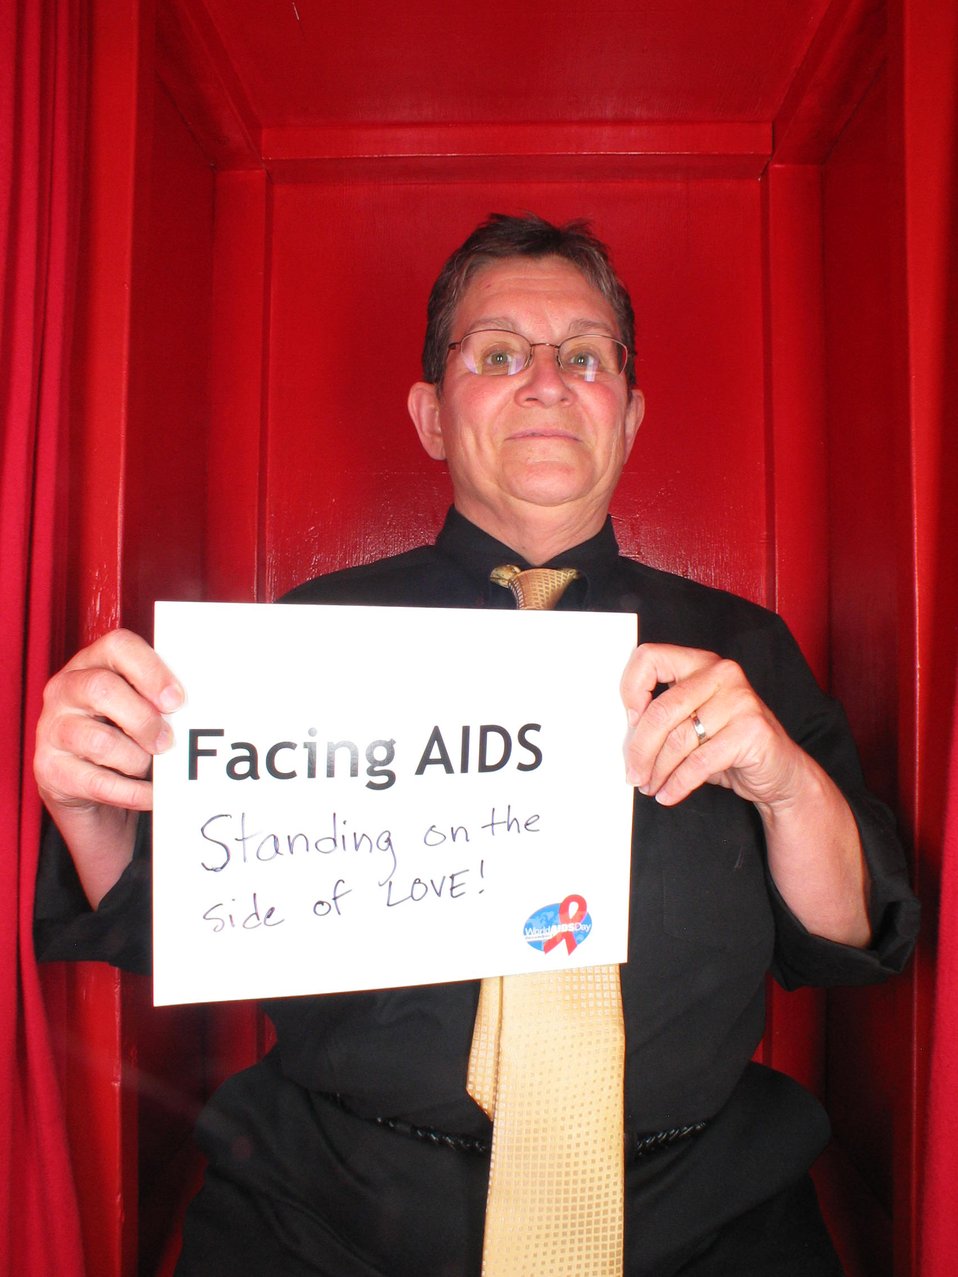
Facing AIDS standing on the side of love!